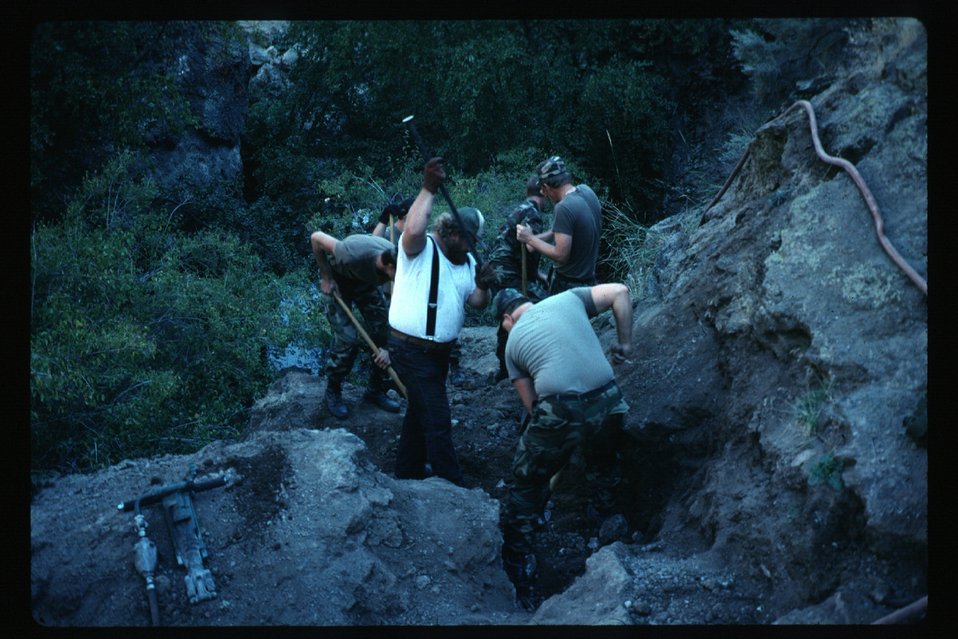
Recreation Jump Creek Falls Building trail LSRD Lower Snake River District